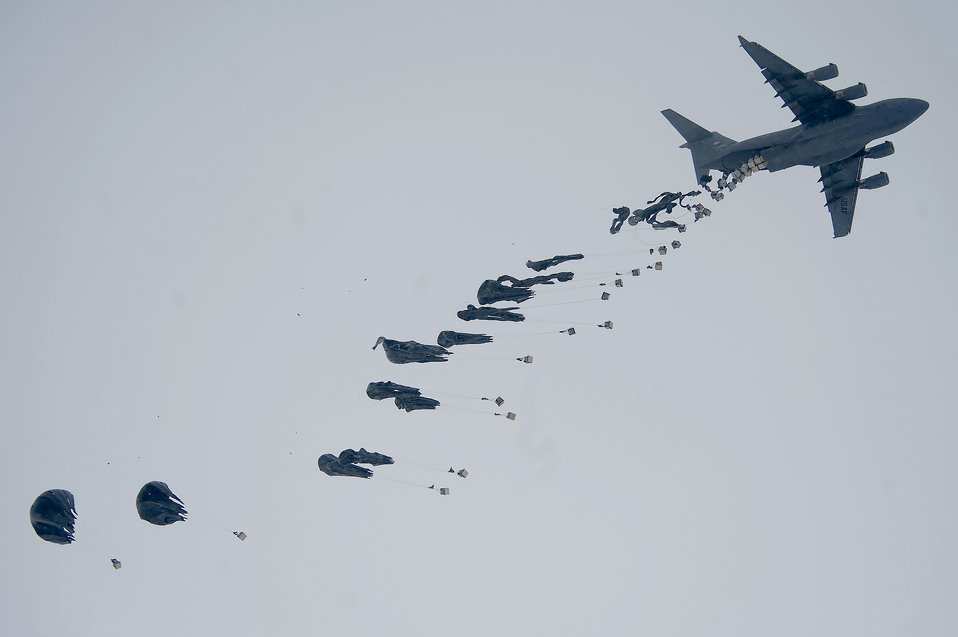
Deployed Soldiers, Airmen work together to keep troops downrange supplied

A C-17 Globemaster III air delivers bundles of fuel to Forward Operating Base Waza K'wah in the Paktika province of Afghanistan. The fuel was part of an air delivery to help sustain members of Task Force Currahee, 4th Brigade, 101st Airborne Division, whose only means of re-supply is through air delivery.